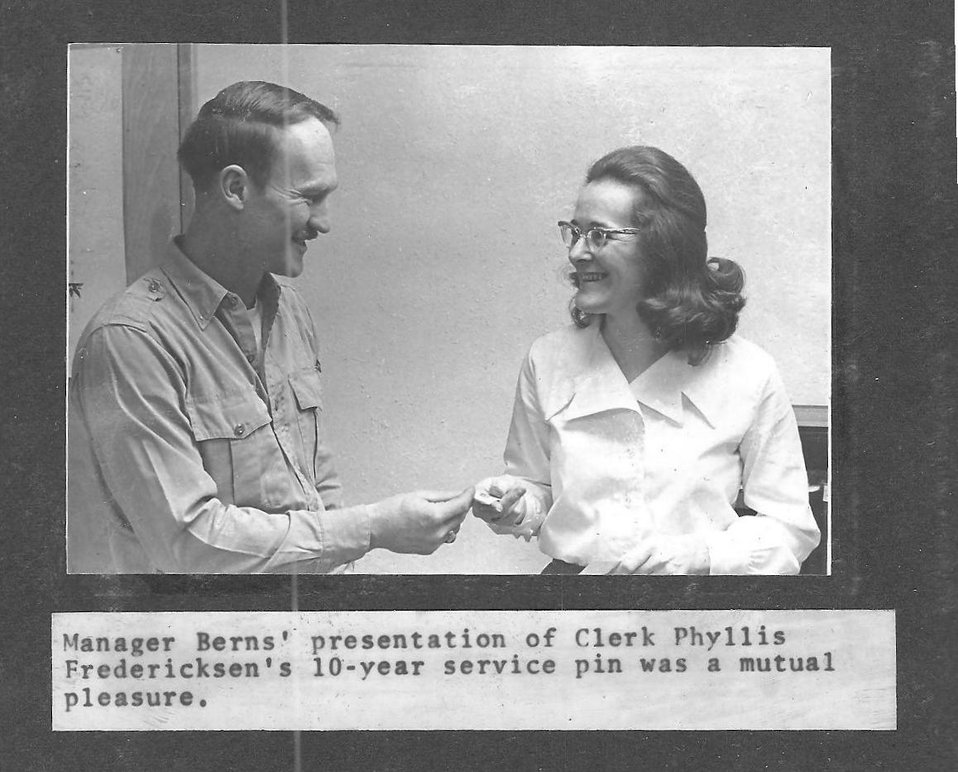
(1970) Employee Awards

Credit: USFWS

Source and Contact: Kodiak National Wildlife Refuge